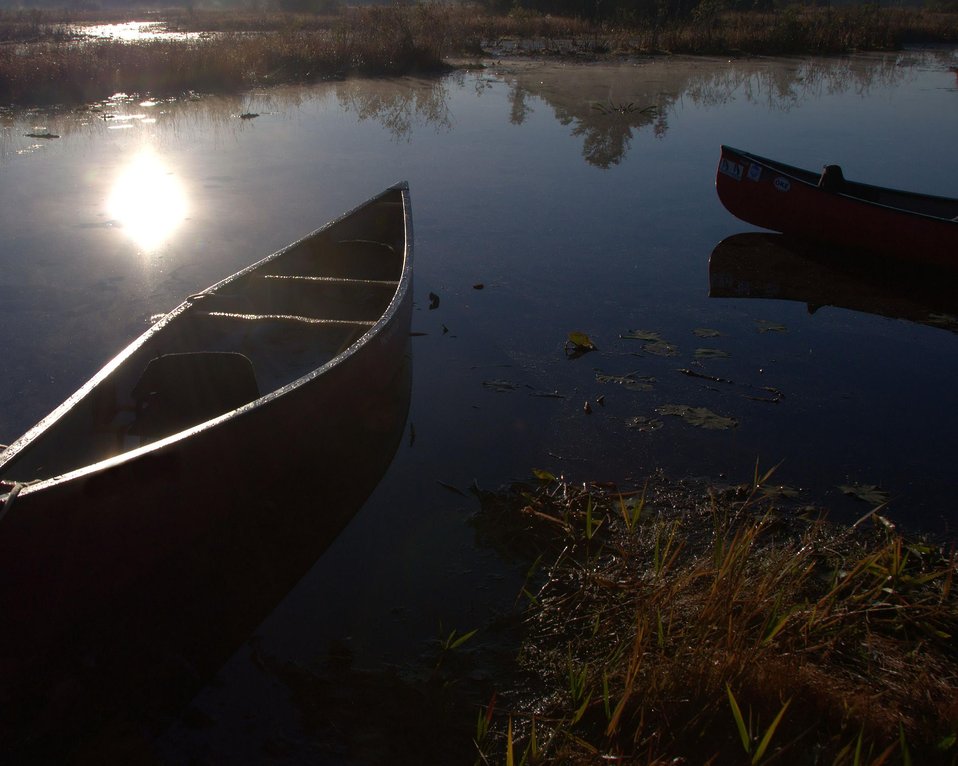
Okefenokee Sunrise

Sunrise at Round Top shelter, Okefenokee National Wildlife Refuge.